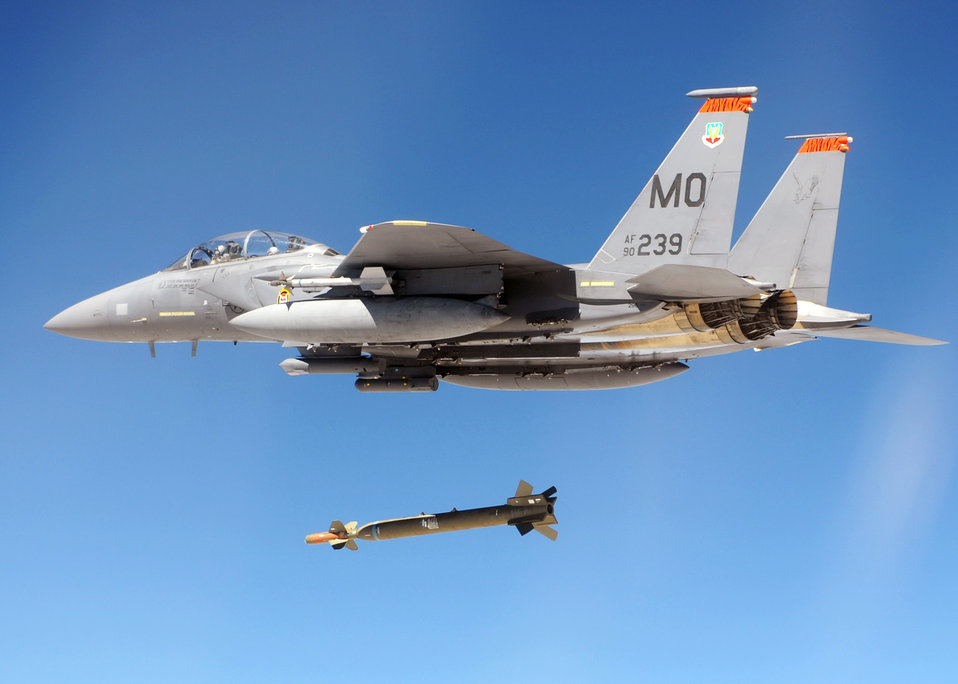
All systems go

An F-15E Strike Eagle drops a GBU-28 during a Combat Hammer mission Aug. 10, 2010, at Hill Air Force Base, Utah. Combat Hammer is an Air-to-Ground Weapons System Evaluation Program maintained by the 86th Fighter Weapons Squadron at Tyndall AFB, Fla. The aircraft is from the 391st Fighter Squadron at Mountain Home AFB, Idaho.